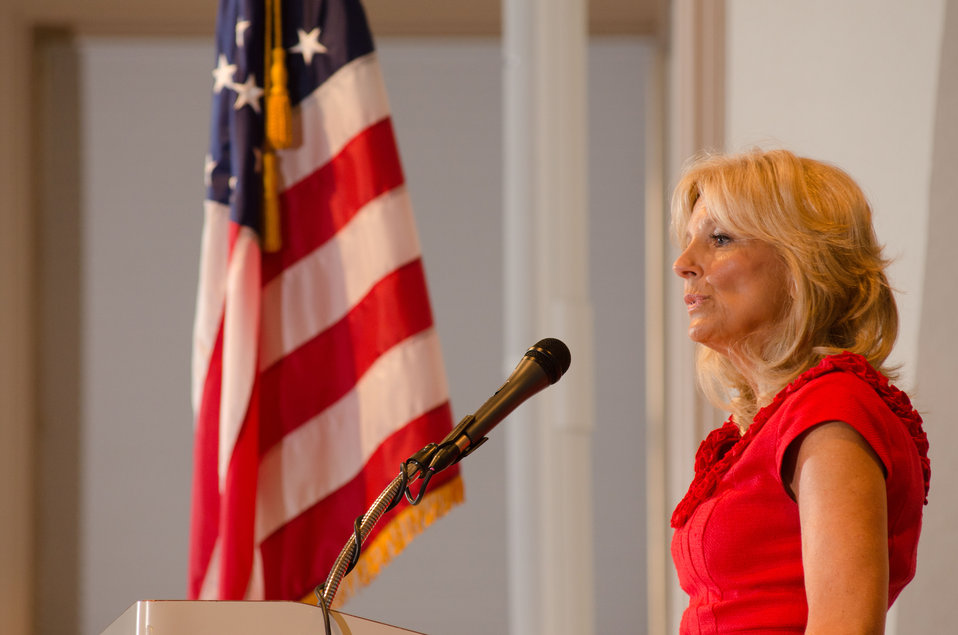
Dr. Jill Biden speaks about “Joining Forces,” the initiative started with First Lady Michelle Obama to encourage all Americans to support military families at the National 4-H Conference, in Chevy Chase. MD, on Monday, March 26, 2012. Joining Forces is a comprehensive national initiative to mobilize all sectors of society to give our service members and their families the opportunities and support they have earned.